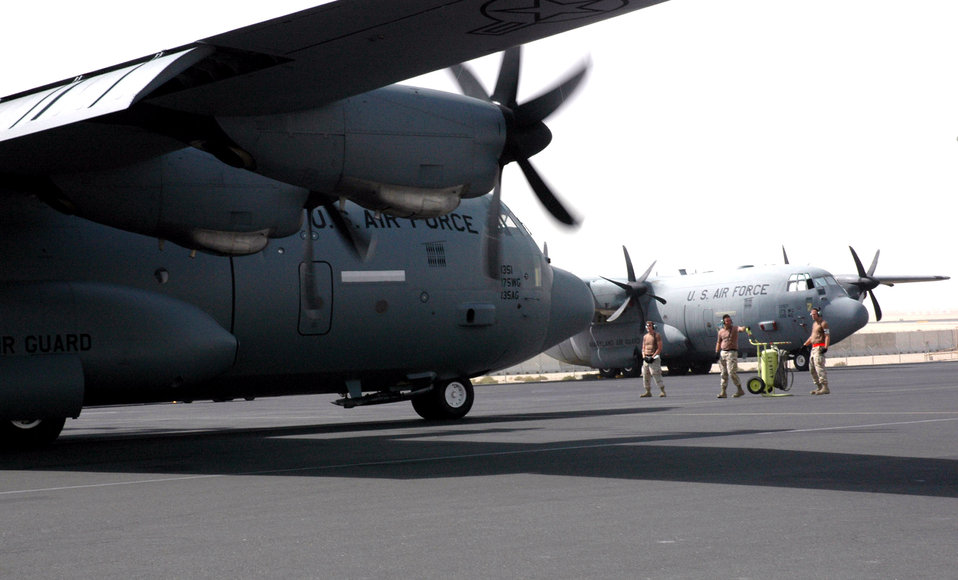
June 1, 2 airpower summary: Airlift key to mission success

Two C-130 Hercules aircraft spin up for a mission June 2 at a base in Southwest Asia. Coalition C-130s and C-17 Globemaster IIIs flew 145 airlift sorties June 2 and delivered more than one million pounds of cargo. Airlift provided intra-theater heavy airlift support, helping to sustain operations throughout Afghanistan, Iraq and the Horn of Africa.